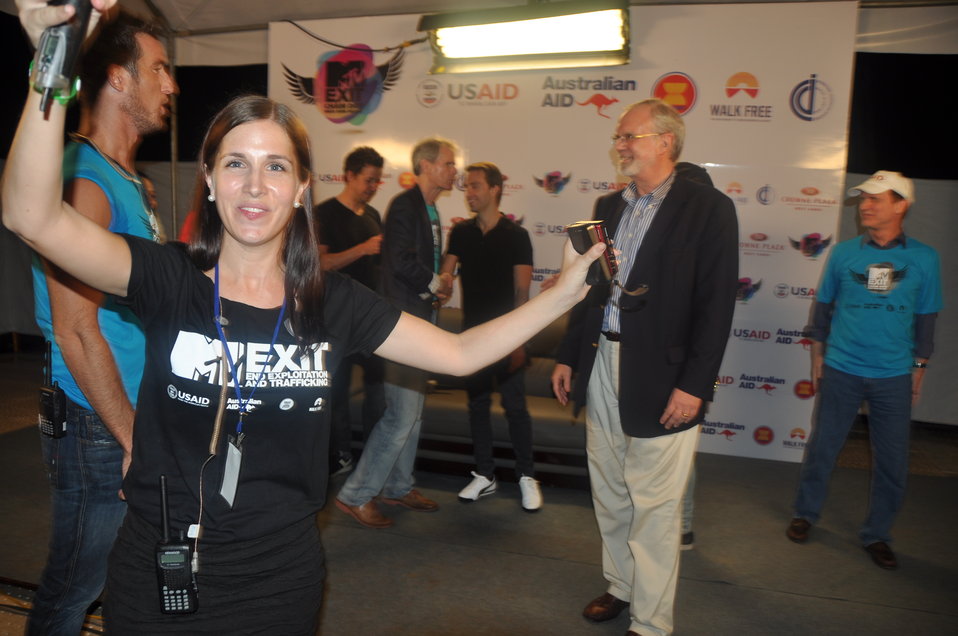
USAID supports MTV EXIT concert against human trafficking and exploitation